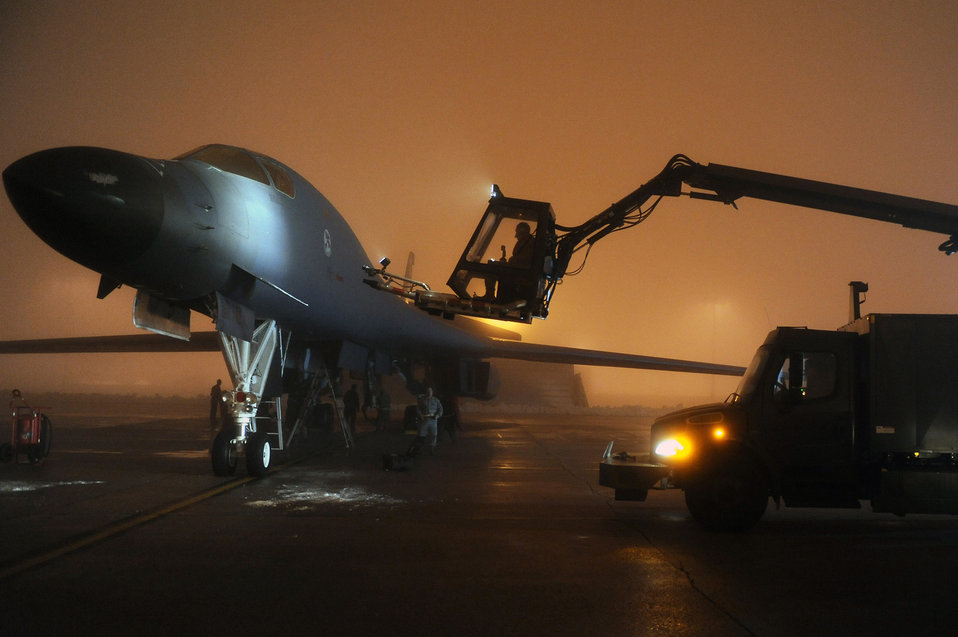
Preparing for battle

Airmen from the 34th Bomb Squadron work to de-ice a B-1B Lancer March 26, 2011, at Ellsworth Air Force Base, S.D, in preparation for a mission in support of Operation Odyssey Dawn.